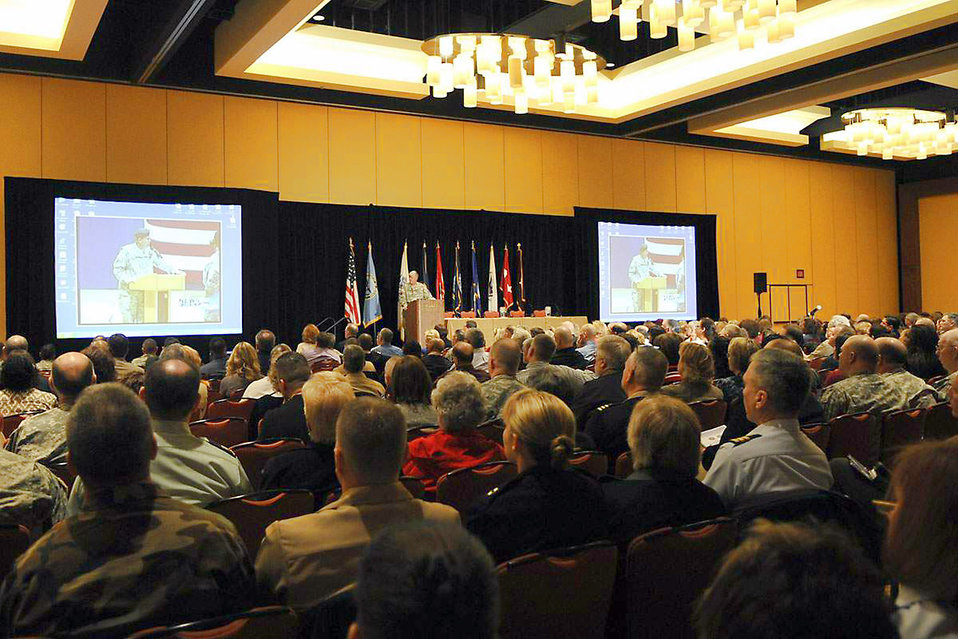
DOD suicide prevention conference under way

More than 750 gather for the 2009 Department of Defense/Veterans Affairs Annual Suicide Prevention Conference Jan. 12 in San Antonio. The conference runs through Jan. 15.